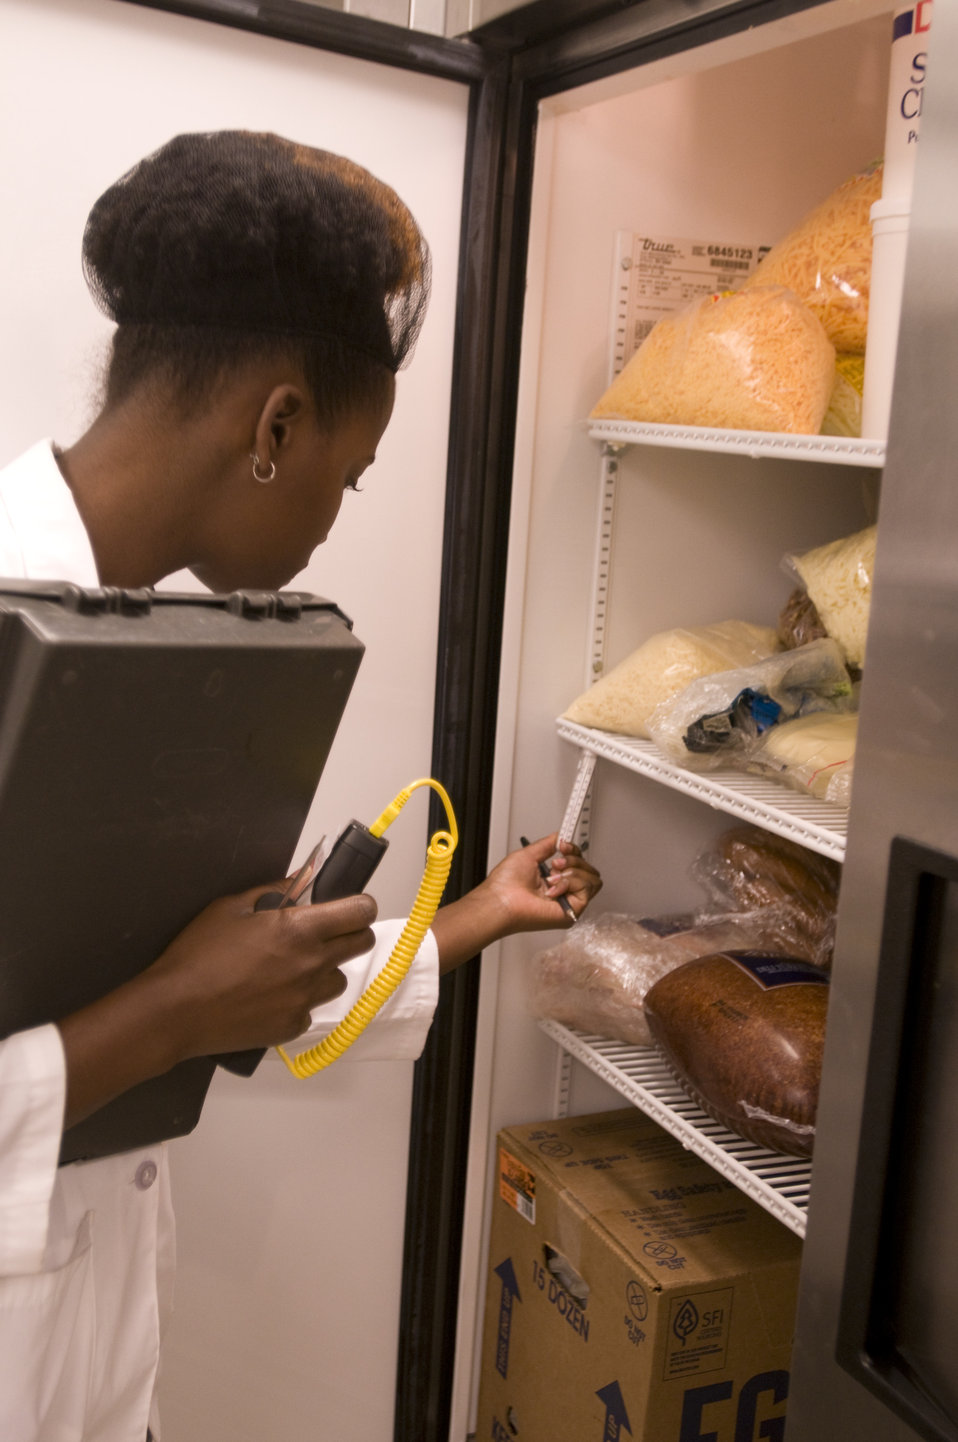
The state-appointed health inspector pictured here at right, was in the process of performing an assessment of this kitchen's sanitary condition. At this point in her inspection, she was about to take some thermal readings of contents within a refrigerator.